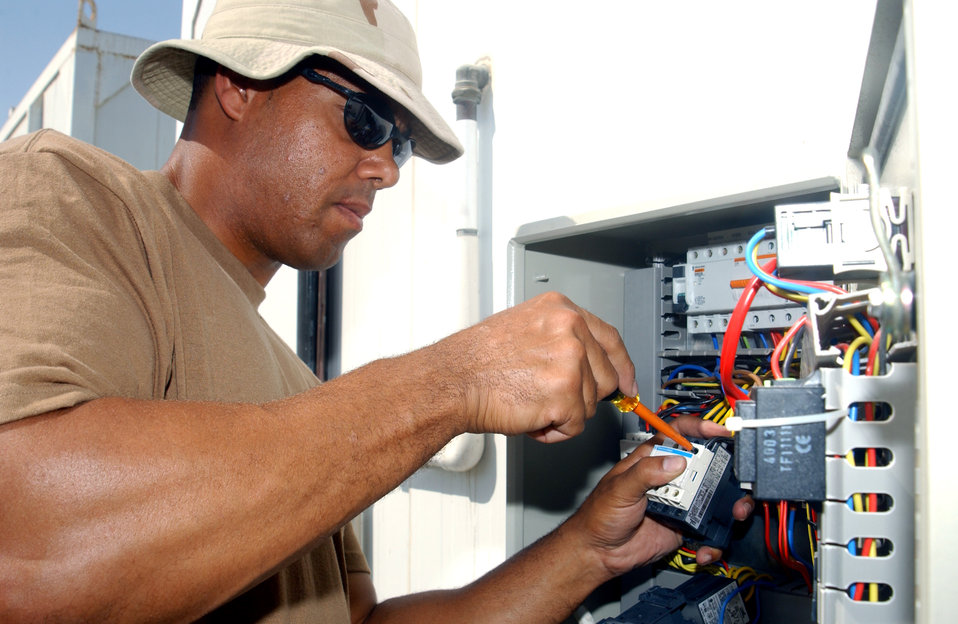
Keeping it cool

Master Sgt. Markus Taylor tightens the screw on a control unit for a freezer Oct. 11 in Southwest Asia. Sergeant Taylor made a repair to the freezer, which holds between $50,000 to $75,000 worth of food for better than 1,500 people at the 380th Air Expeditionary Wing. Sergeant Taylor is assigned to the 380th Expeditionary Civil Engineer Squadron deployed from Yokota Air Base, Japan.